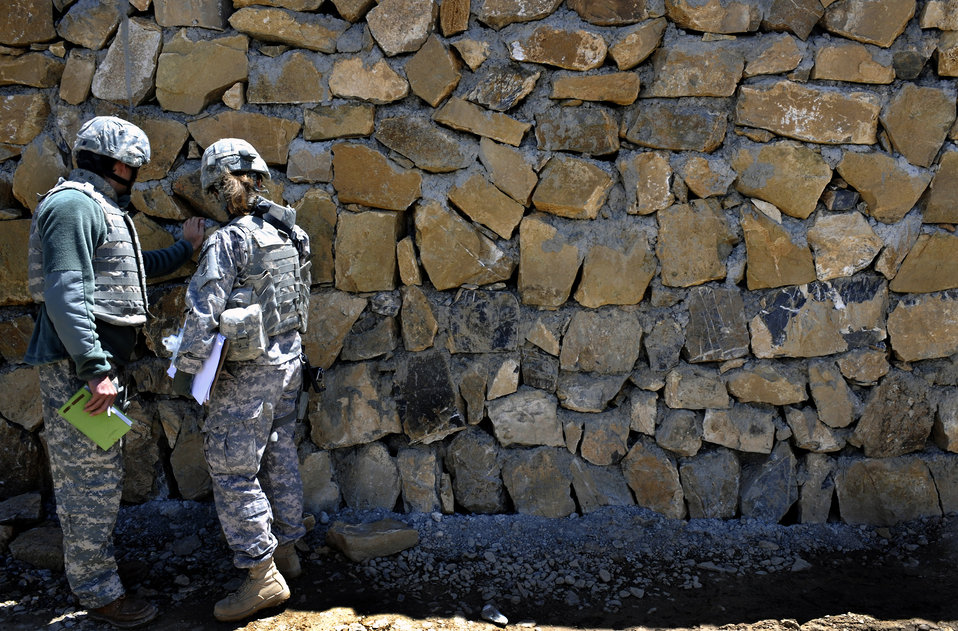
Providing reconstructive assistance, hope to Afghan homeland

Maj. Kimberly Riggs works with her interpreter to assess masonry work at the Sayed Karam Female Medical Providers Quarters April 13 in Gardez City, Afghanistan. Major Riggs is the engineer officer in charge of the Paktya Provincial Reconstruction Team.